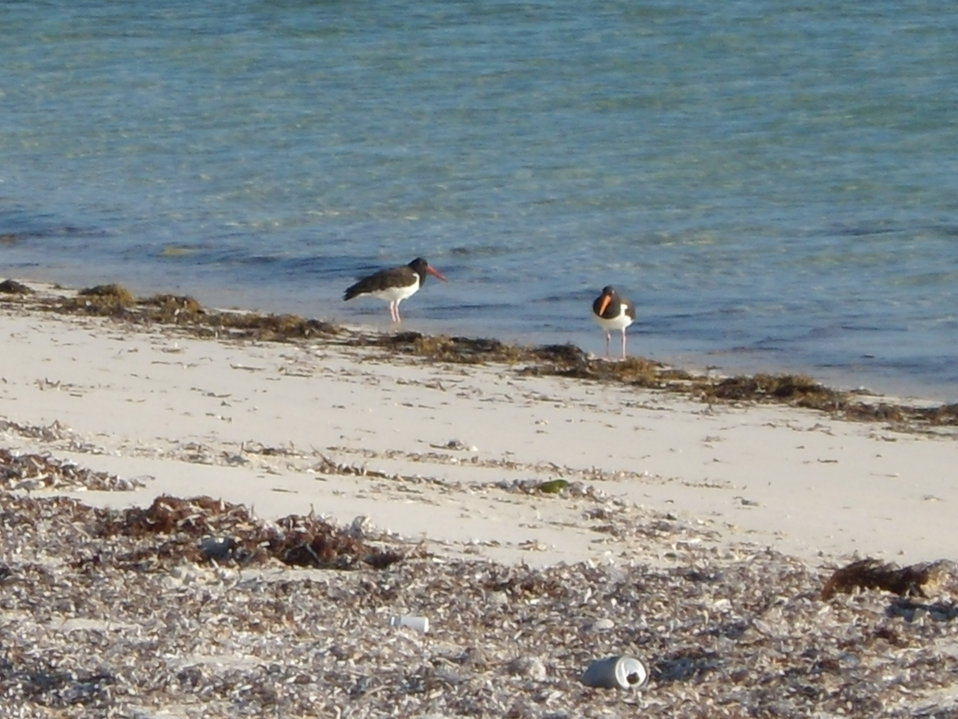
American Oystercatchers (adults)

American oystercatchers on Great Inagua Island.